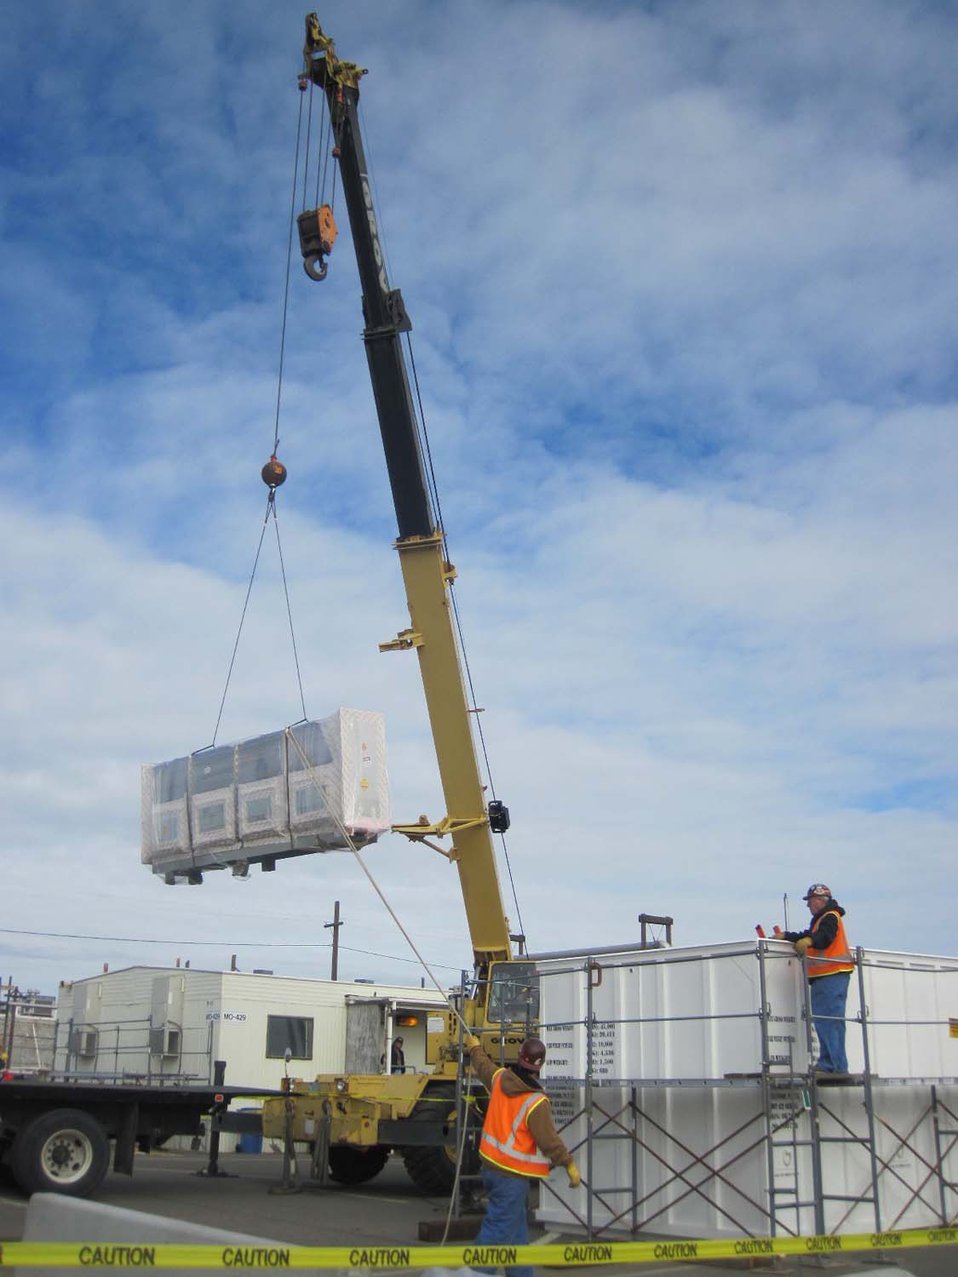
Gloveboxes removed from the site

Recovery Act-funded work at the Hanford site.